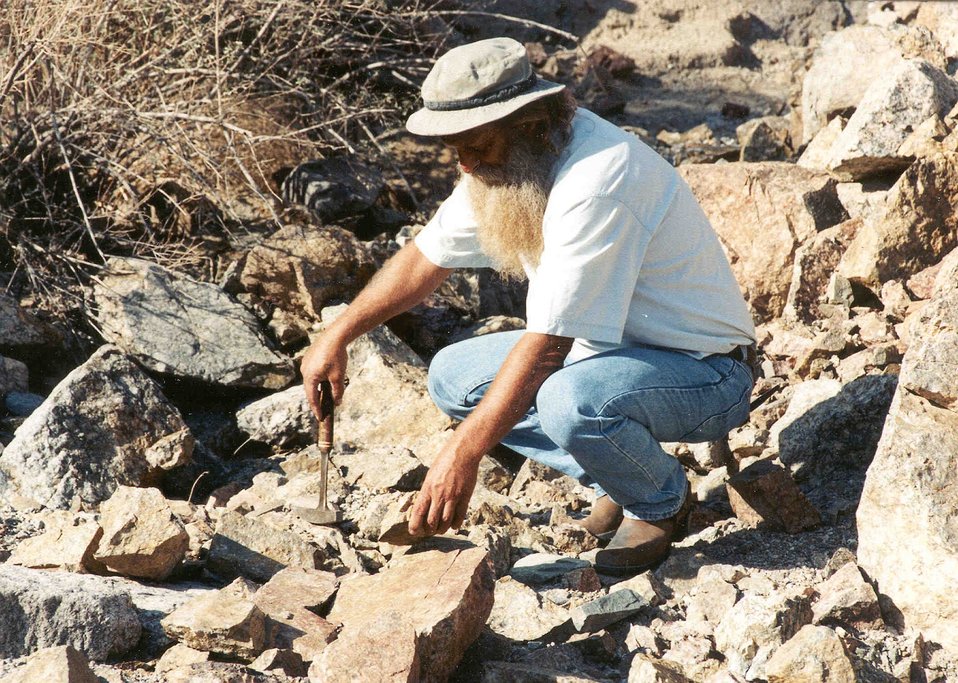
A miner doing some rockhounding.